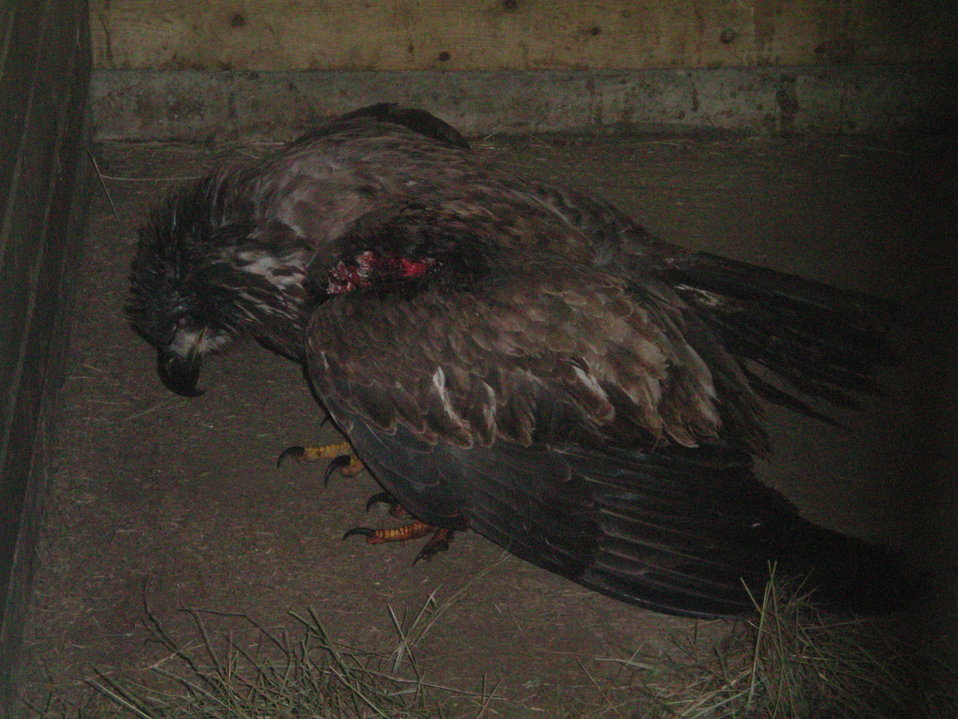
Eagle Shooting

The United States Fish and Wildlife Service is investigating the shooting of an immature bald eagle which was shot near the city of Crosby, ND on October 11, 2012.

A reward of up to $2,500.00 is being offered for information leading to the arrest and conviction of the person(s) responsible. Witnesses reported the person(s) responsible for the shooting were driving a white Dodge dually pickup truck that had no additional markings. The United States Fish and Wildlife Service is asking for assistance from the public to help identify this vehicle and the people who were traveling in the vehicle during the incident.

If you know anyone that lives in the Crosby, North Dakota area or know of someone that was in the area on October 11, 2012, and drives a white Dodge dually pickup, please contact Special Agent Kevin Downs with the United States Fish and Wildlife Service at (701) 355-8531, (701) 390-4735 or (701) 255-0593 to help prevent this from happening again.

Bald eagles are protected by the Bald and Golden Eagle Protection Act, the Migratory Bird Treaty Act, and by North Dakota State law.